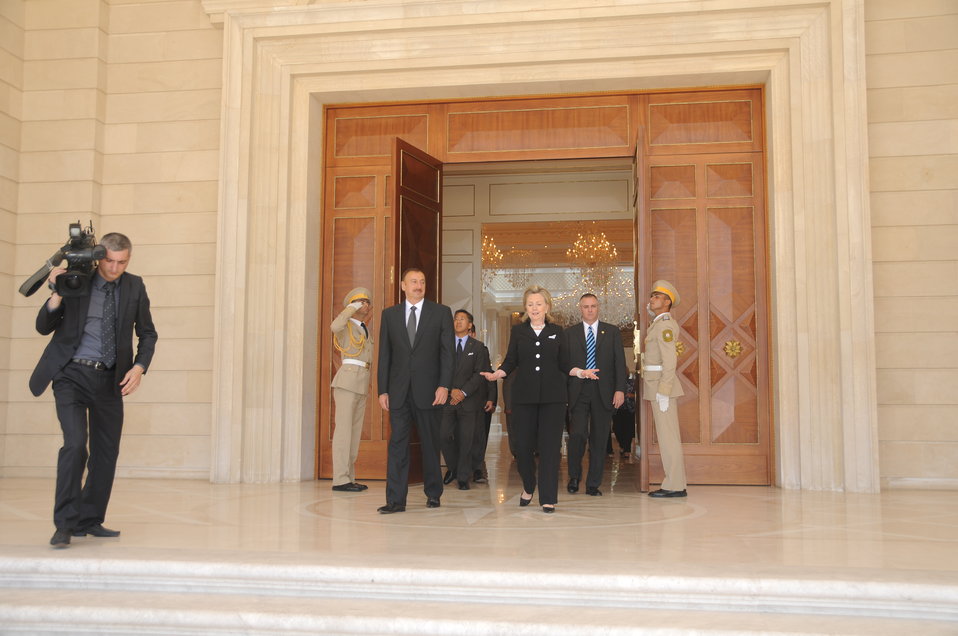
Secretary Clinton With Azerbaijani President Aliyev

U.S. Secretary of State Hillary Clinton walks with Azerbaijani President Ilham Aliyev at the Presidential Residence in Zagulba, Azerbaijan, on July 4, 2010.